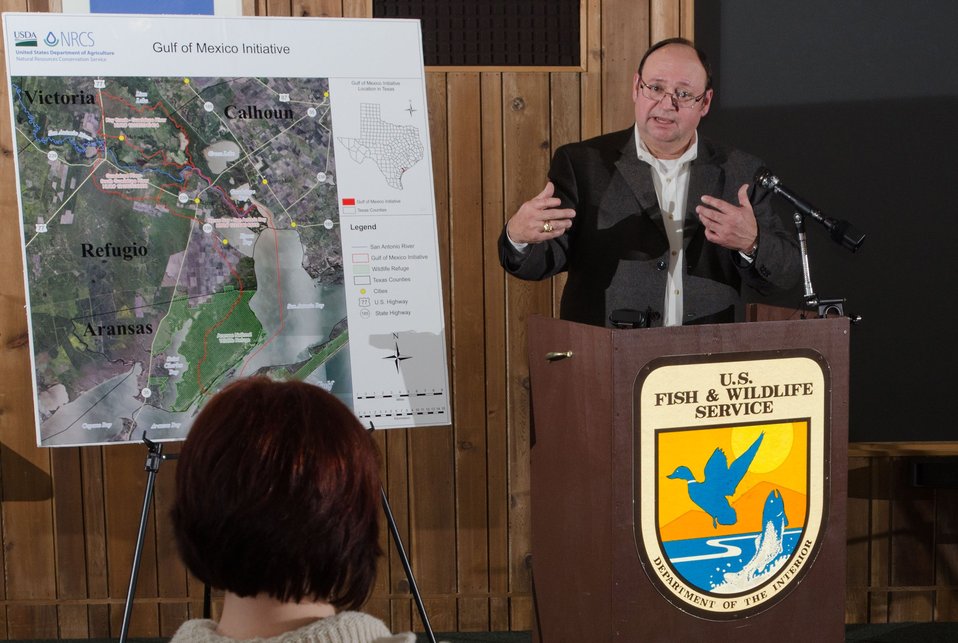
U.S. Department of Agriculture (USDA) Natural Resources Conservation Service (NRCS) State Conservationist Salvador Salinas with Federal and state partners, including representatives from U.S. Fish and Wildlife Service and local soil and water conservation districts (SWCDs) held a press conference at the Aransas National Wildlife Refuge, in Austwell, TX, on Friday, Dec. 16, 2011. Salinas covered the recent announcement of the USDA-NRCS Gulf of Mexico Initiative (GoMI) efforts to improve water quality, habitat, and the health of the Gulf ecosystem. “Launching this initiative is a top priority for NRCS in Texas because the Gulf of Mexico is one of our state’s premier natural resources. It provides vital habitat for wildlife, and creates jobs in industries that depend upon them. The health of this resource is essential to Texas as well as to the nation,” said Salinas.
The Texas initiative focuses on three watersheds in Refugio, Calhoun, Victoria and Aransas counties and ultimately the Gulf of Mexico. “What is really compelling about GoMI and other similar conservation efforts is that they prove that Texas farmers and ranchers not only feed and clothe us and power our vehicles, but they can also help protect and restore our rivers and provide more habitat for wildlife,” stated Salinas. “That’s why it is important that this conservation project is not about taking productive farm land out of production. This is a working lands initiative, so that not only are we helping to restore the health of the Gulf, but we’re also helping to sustain and enhance the productivity of the Gulf’s farms and ranches.”